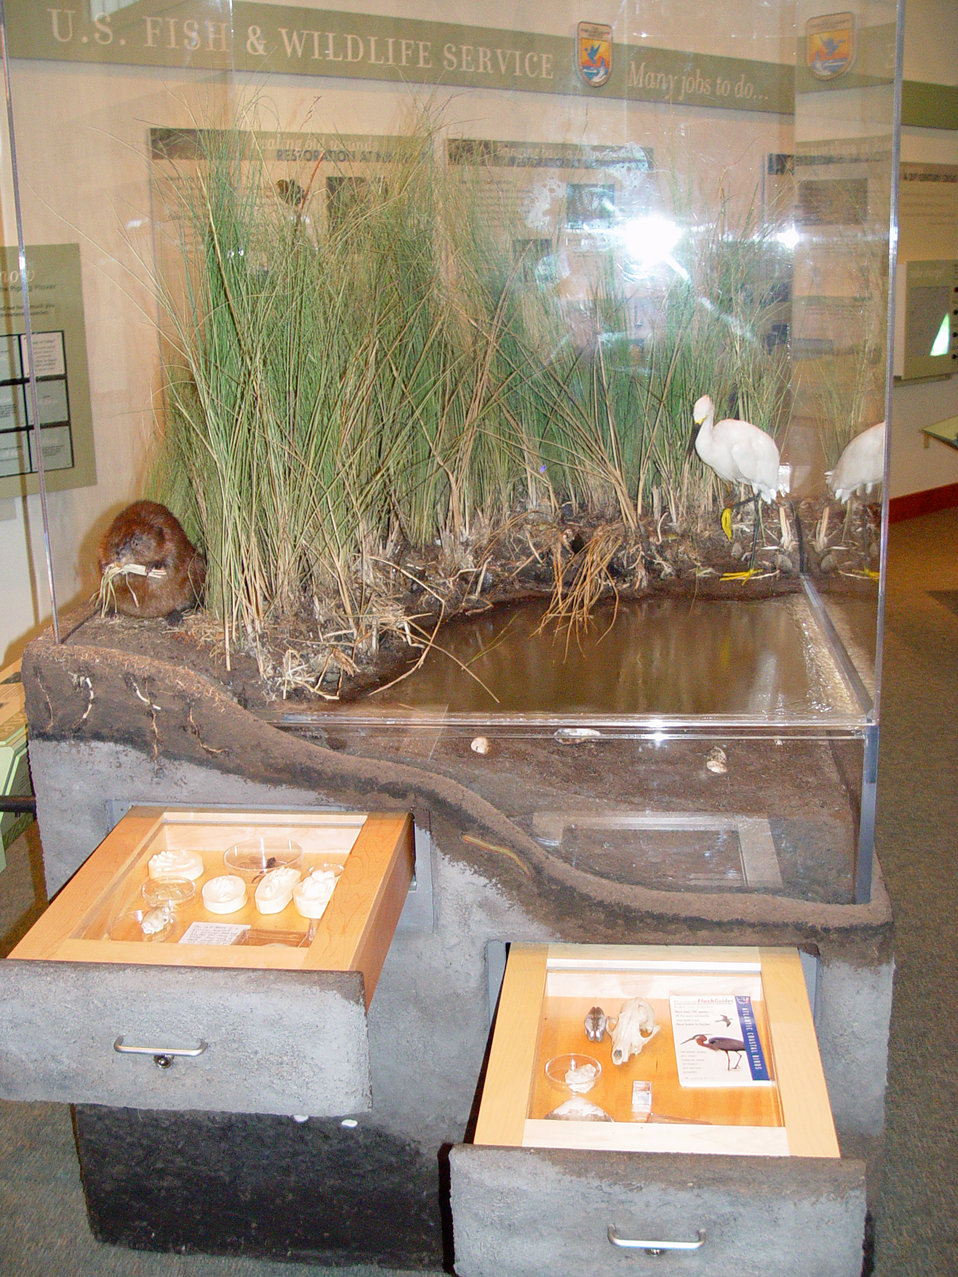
Kettle Pond Visitor Center in Charlestown, RI.